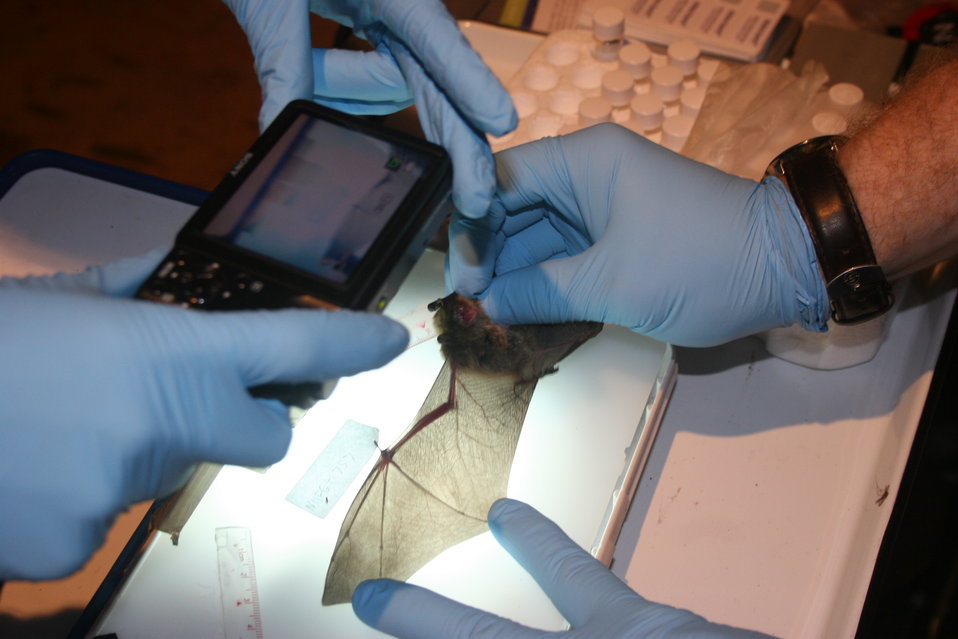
Taking photo of bat wing

Biologists and researchers inspect wings for signs of damage from WNS, take photos and sebum samples for analysis.